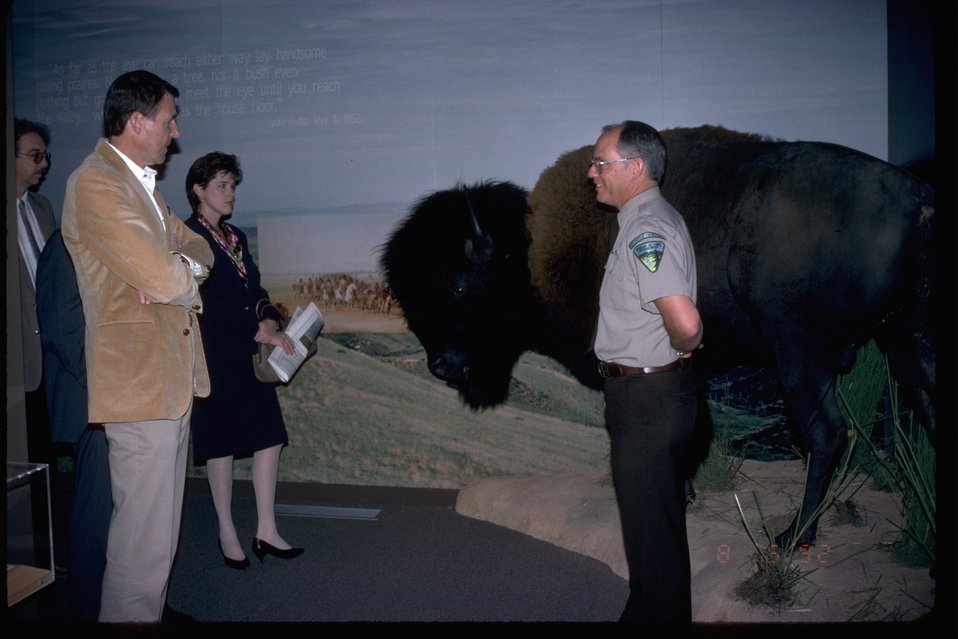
Dave Hunsacker speaking with visitors at the NHOTIC.